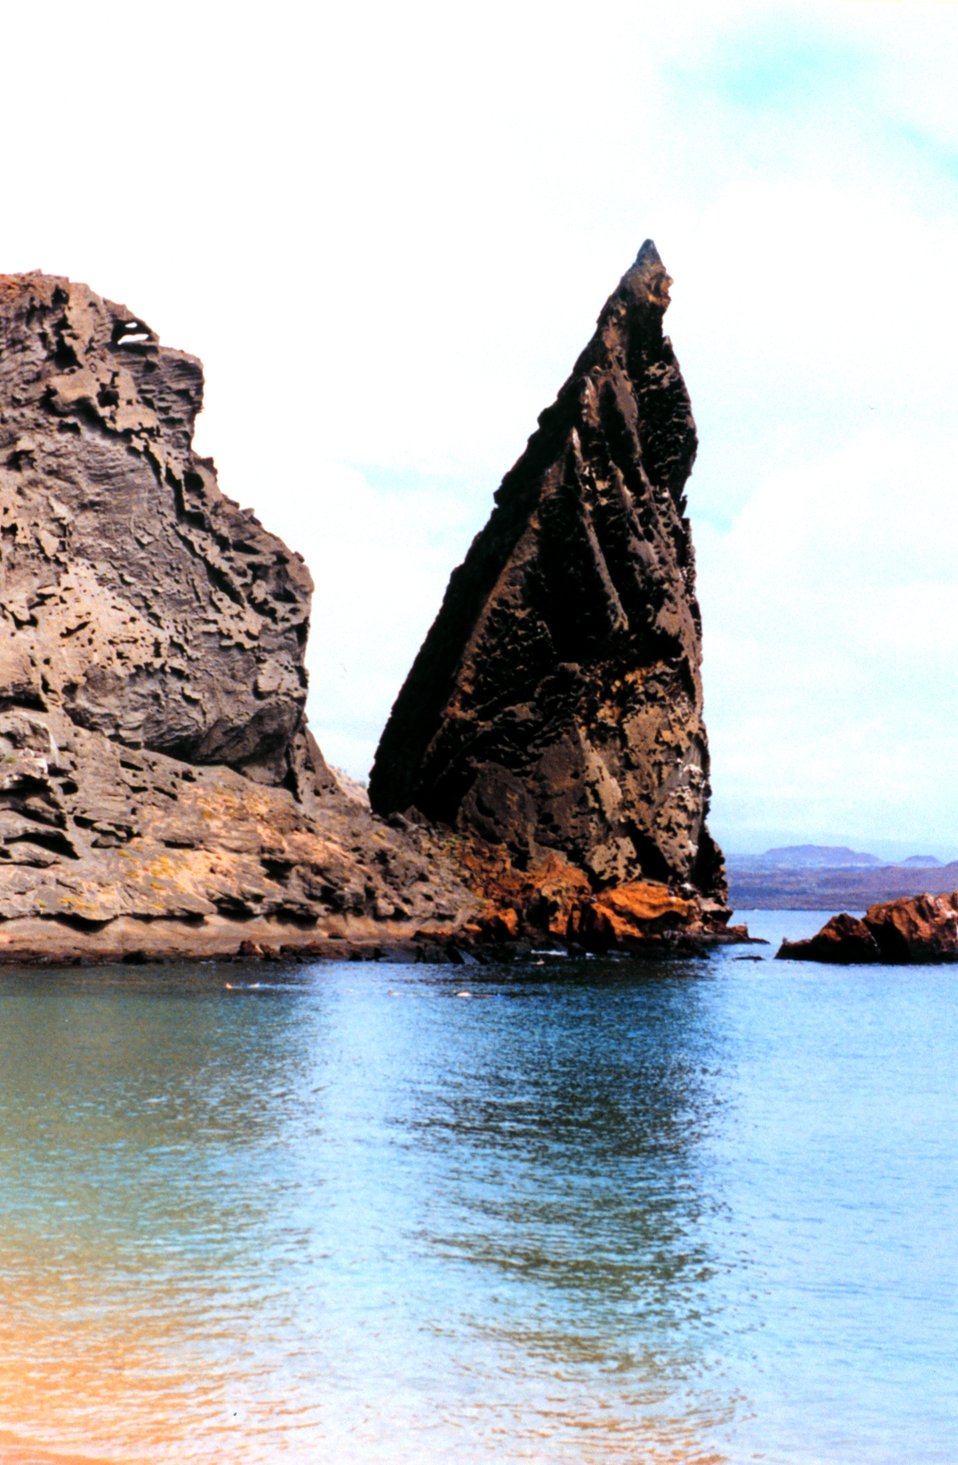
Pinnacle Rock closeup